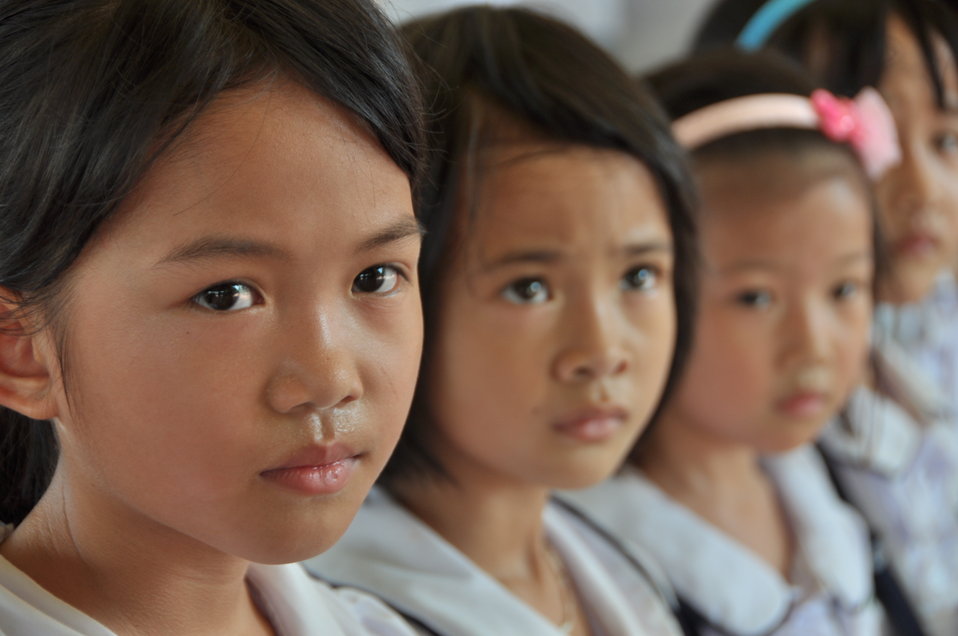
USAID supports deworming education and medication distribution in Bac Giang Province

May 20, 2013